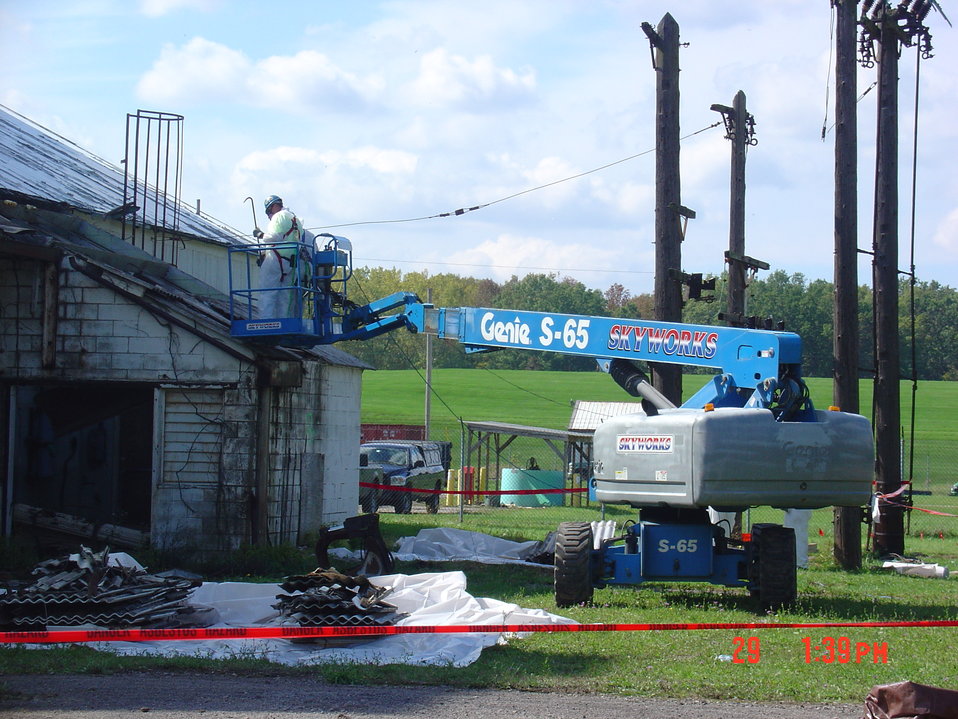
NFSS 401 ASBESTOS REMOVAL

Activities from the Niagara Falls Storage Site, which is associated with the former Lake Ontario Ordnance Works. Formerly Utilized Sites Remedial Action Program (FUSRAP), a program initiated in 1974 to identify, investigate and clean up or control sites that were part of the Nation's early atomic energy and weapons program. Activities at the sites that are eligible for FUSRAP were conducted by Manhattan Engineer District (MED) or the Atomic Energy Commission (AEC), both predecessors of the Department of Energy (DOE). The U.S. Army Corps of Engineers was assigned management of FUSRAP by Congress in 1997.